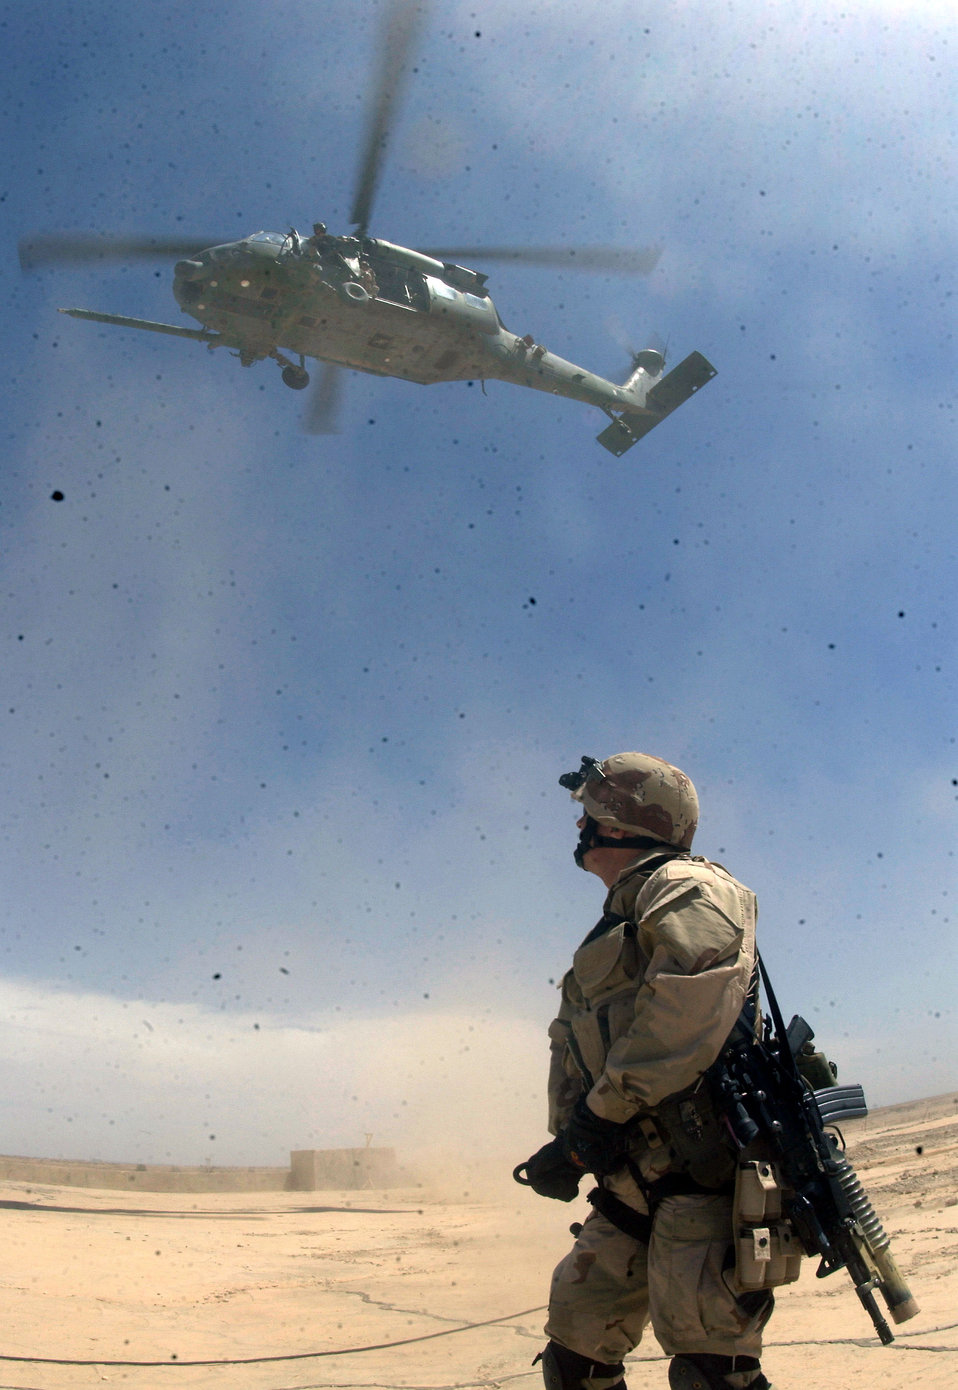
Dust off

OPERATION IRAQI FREEDOM -- A pararescueman from the 301st Rescue Squadron watches his helicopter leave after rappelling down from it April 12, 2003 at Tallil Air Base, Iraq during Operation Iraqi Freedom.